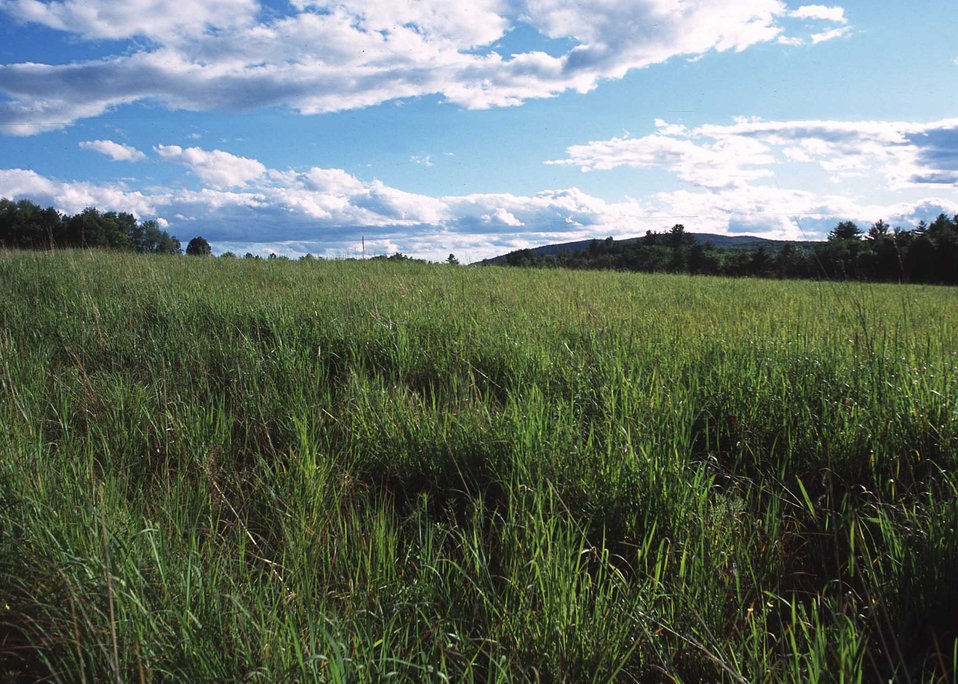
Warm season grassland habitat restoration in Litchfield County.